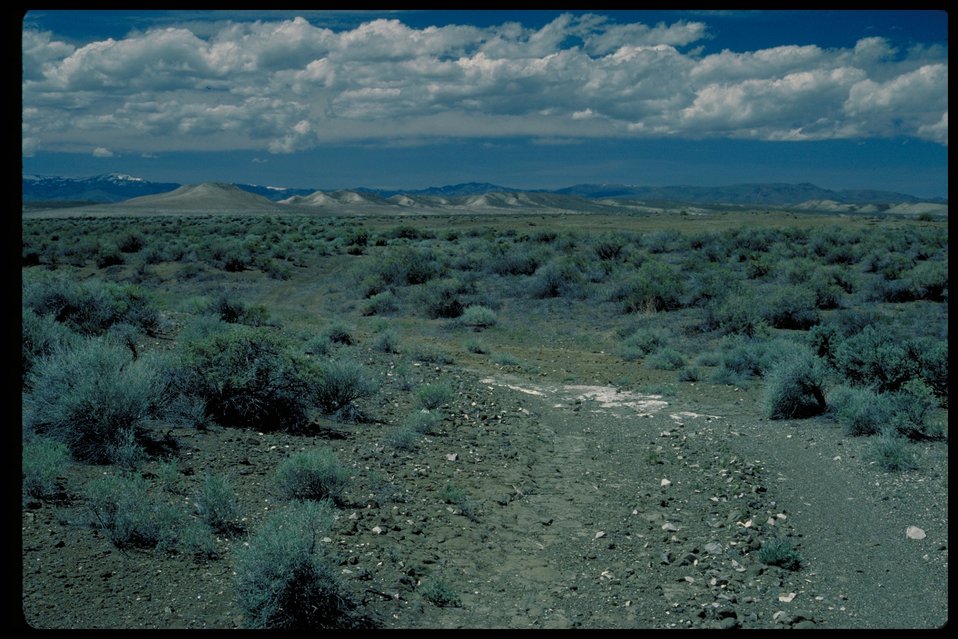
Oregon Trail north of Wildhorse Butte Lower Snake River District